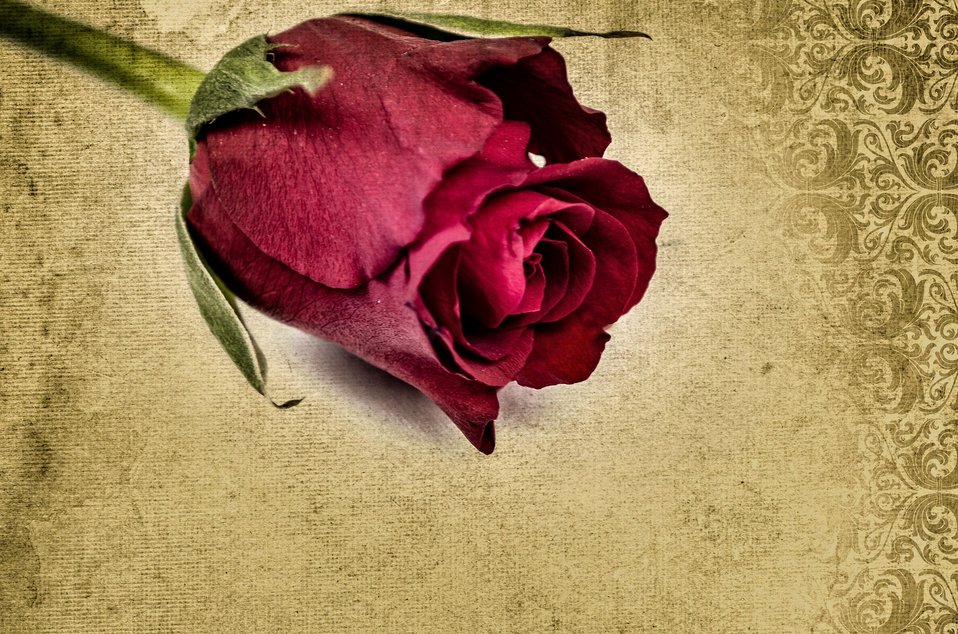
Flower

Red rose on the old background.